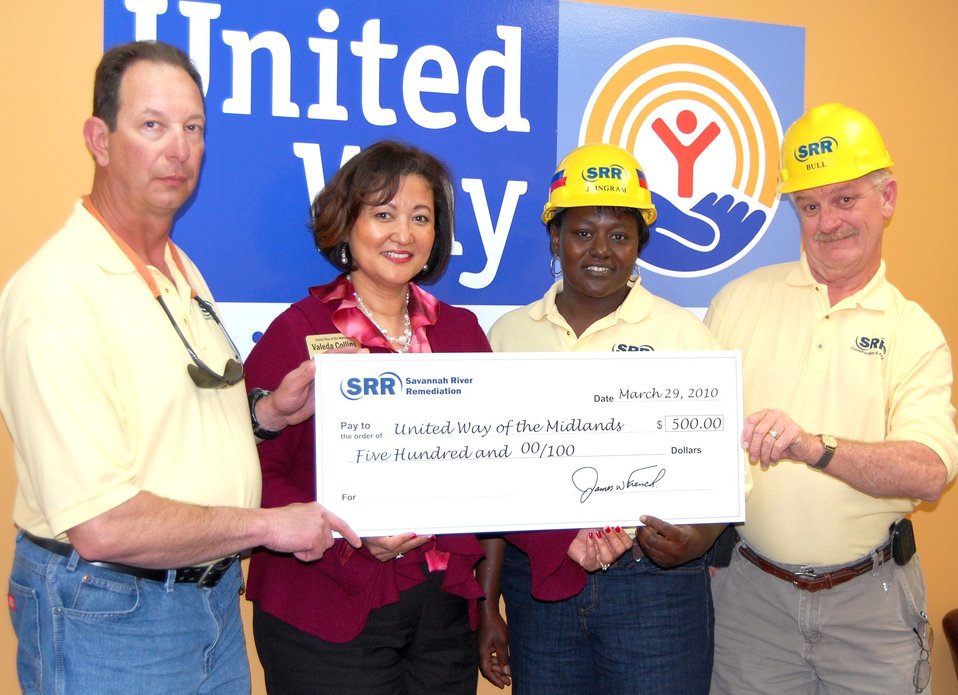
Safe Recovery Act Work Benefits Charities

SRR officials present a $500 check to United Way representatives in February 2010. When SRR employees work a month without a lost day of work due to an injury, the company presents a $500 check to a charity of the employees’ choice.